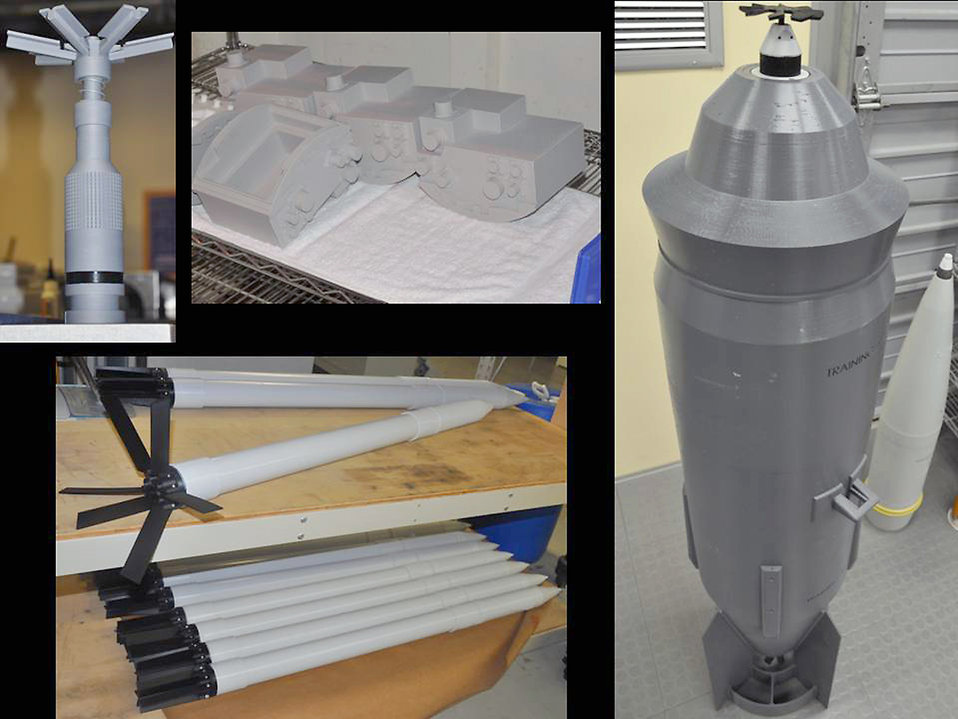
EOD training aids

Some of the bombs and devices fabricated for explosive ordnance disposal training by the 982nd Maintenance Support Squadron at Sheppard Air Force Base, Texas, include (clockwise from top left) submunitions, battery packs, bombs, and projectiles and rockets. Last fiscal year, more than 800 EOD students trained with ordnance devices that were replicated by the 982nd MXS.